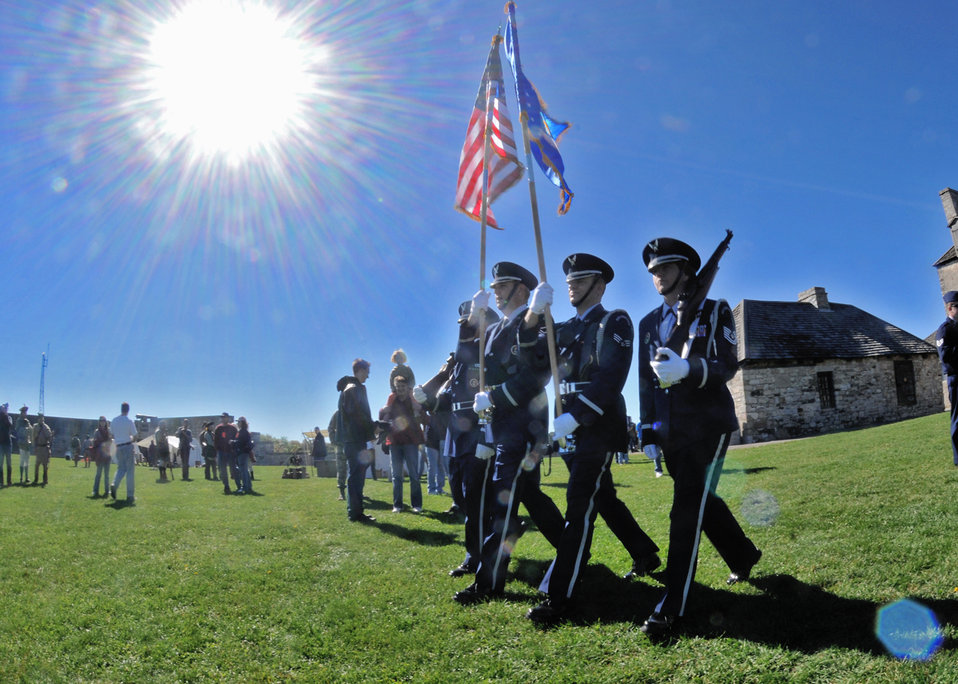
A sunny day to celebrate

The Niagara Falls Air Reserve Station honor guard provides the presentation of colors during a ceremony Oct. 9, 2010, at Old Fort Niagara in Youngstown, N.Y.